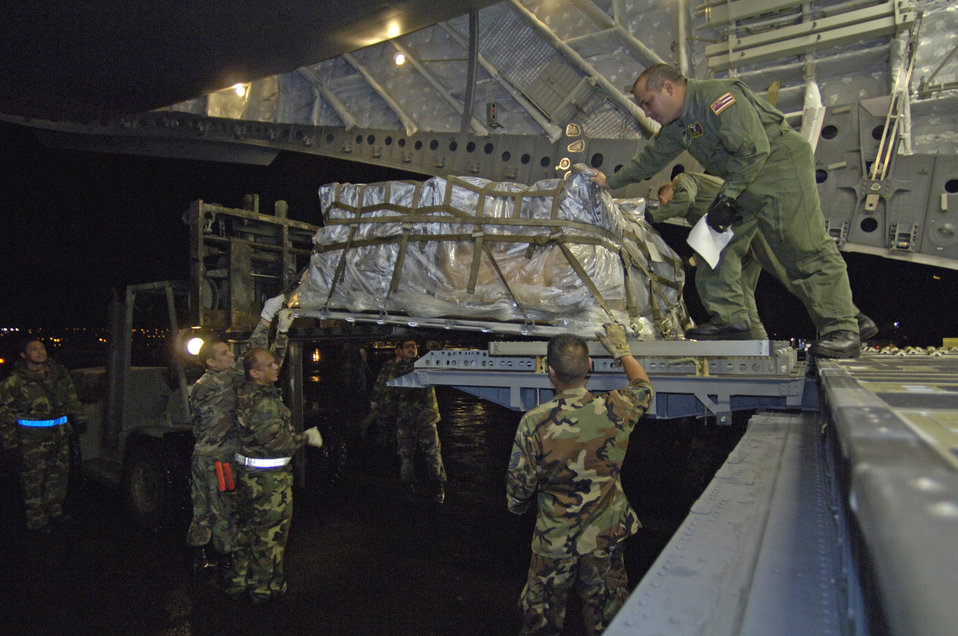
C-17s deliver relief to Kauai

Staff Sgt. Ivan Sanches directs Airmen of the 291st Combat Communications Squadron to load recovery equipment on a C-17 Globemaster III at Hilo International Airport, Hawaii, Thursday, March 16, 2006. The C-17 delivered recovery equipment to the island of Kauai, Hawaii after a dam burst, isolating thousands of people along the island's north shore. Sergeant Sanches is with the Hawaii Air National Guard's 204th Airlift Squadron.